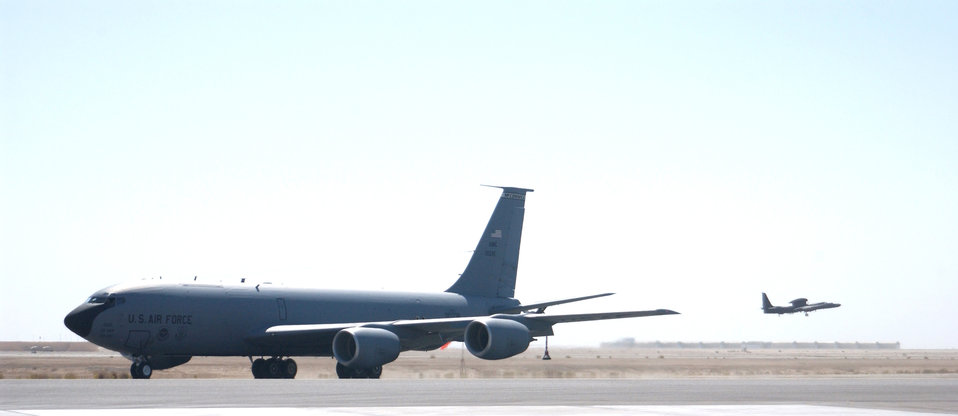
Global mobility aircraft saving lives in Iraq

A KC-135 Stratotanker taxis toward the runway as a U-2